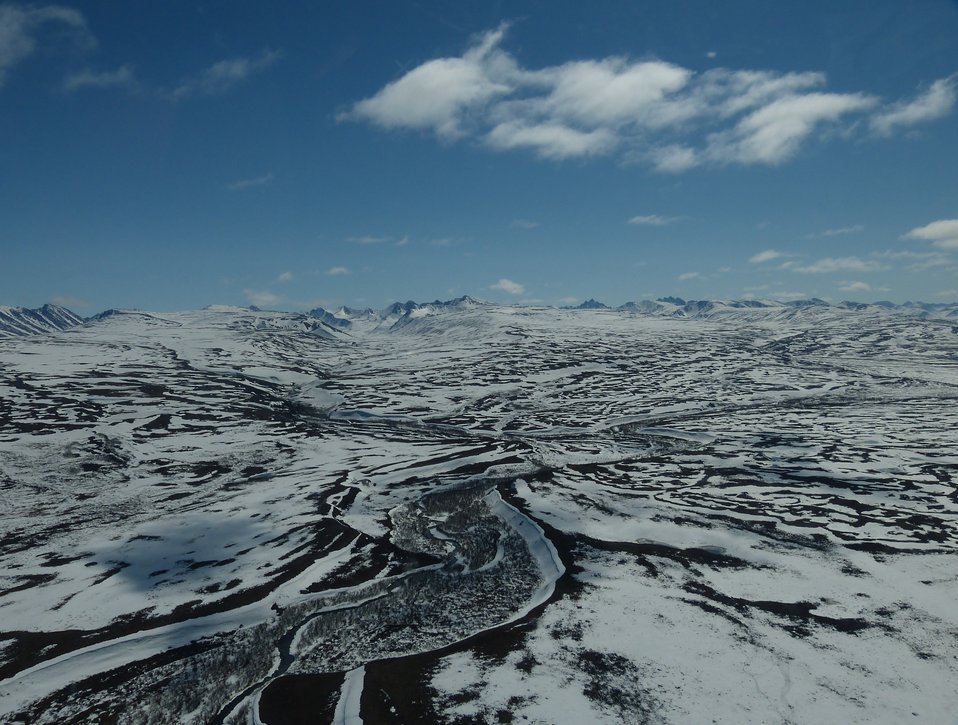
Kilbuck Mountains May2013 KSowl

Cliff-nesting raptor survey, Kilbuck Mountains, Yukon Delta National Wildlife Refuge

Photo credit: Kristine Sowl,
USFWS, YDNWR